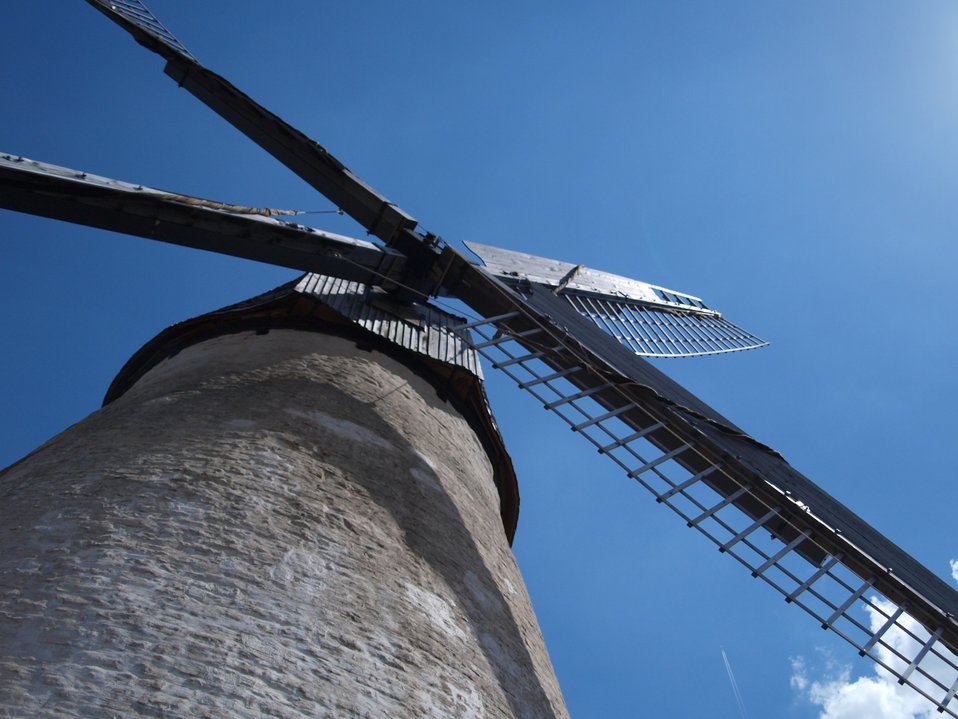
Windmill

Perspective view of a windmill against blue sky.